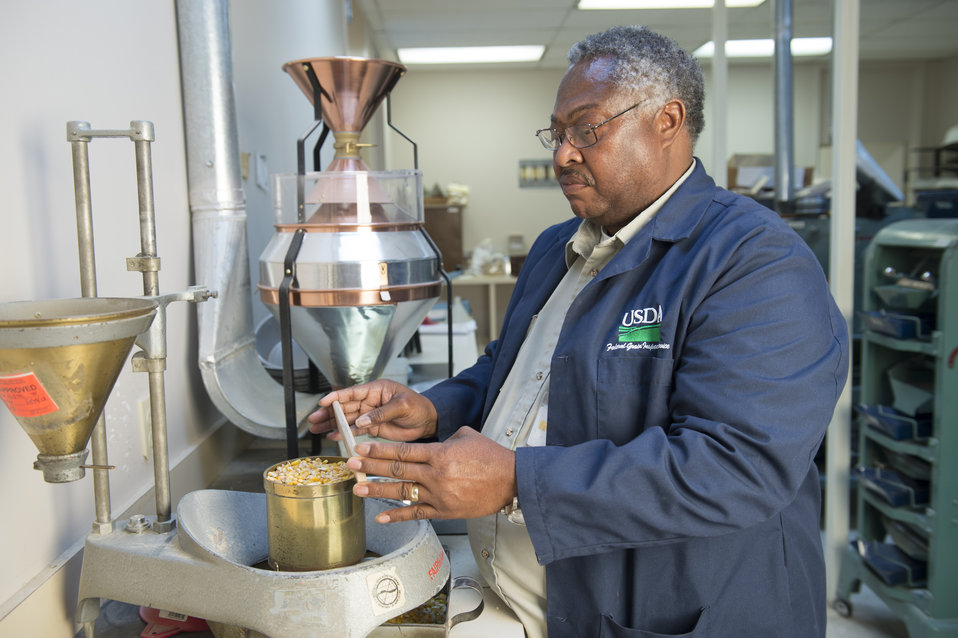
A U.S. Department of Agriculture (USDA) Grain Inspection, Packers and Stockyards Administration (GIPSA) Federal Grain Inspection Service (FGIS) scientist tests corn at the FGIS inspection laboratory in New Orleans, LA on Monday, Nov. 18, 2013.